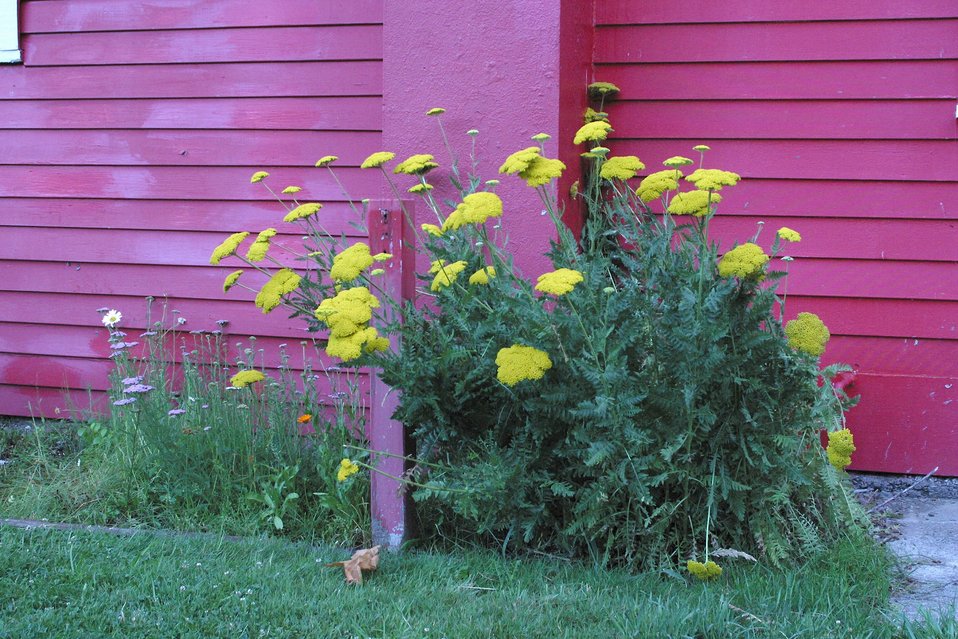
Flowers add color to the Rogue River Ranch house.